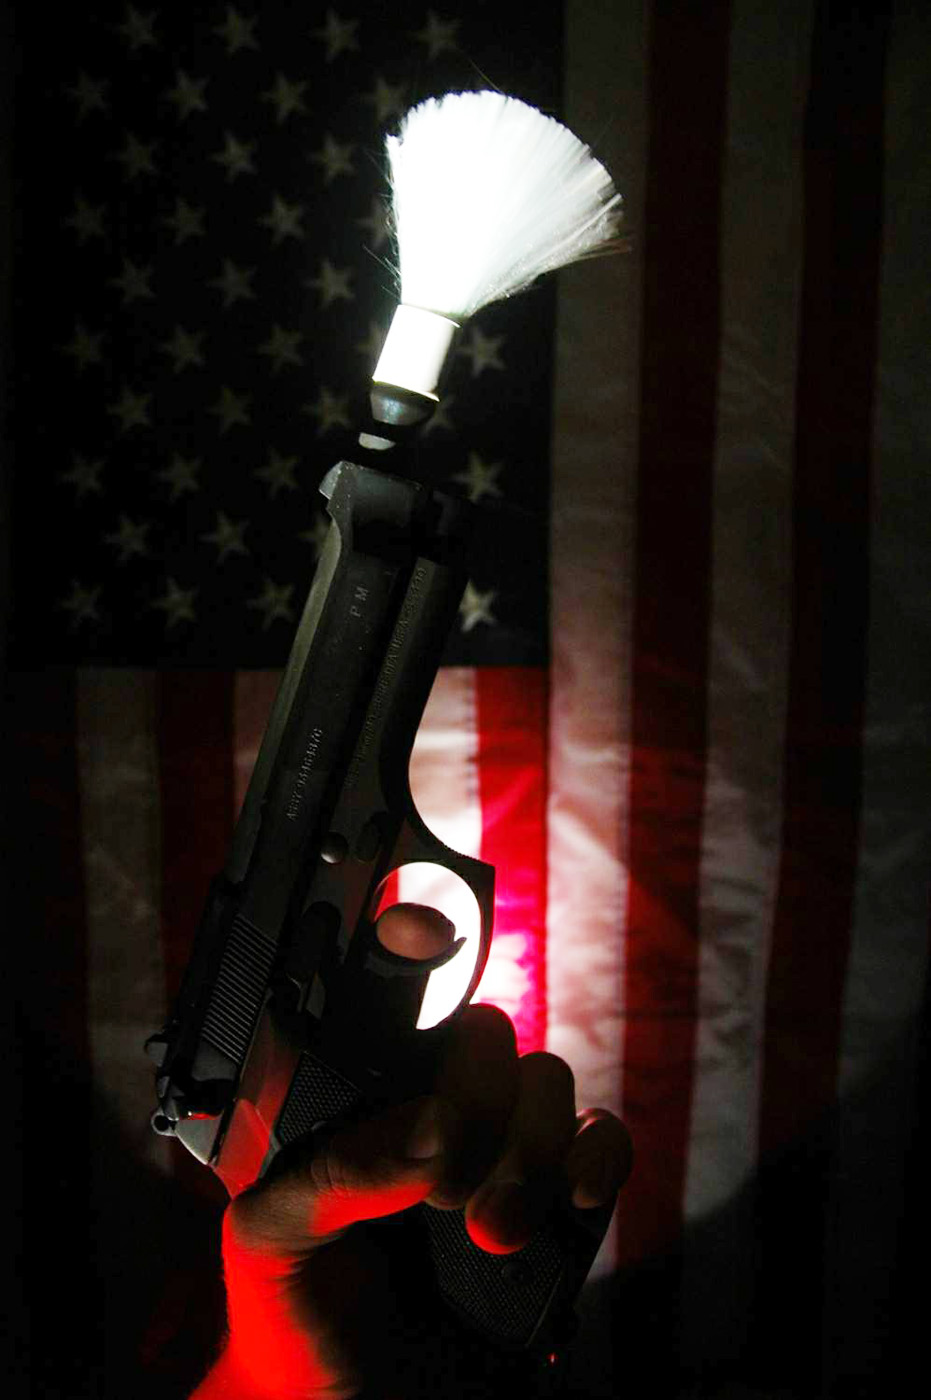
Battlefield detectives fight with fingerprints

Weapons Intelligence Team members collect biometric evidence from pre- and post-blast improvised explosive device incidents in May at Al Asad Air Base, Iraq. WIT members are skilled in IED construction, fingerprinting, biometrics, foreign weapons, media exploitation and sensitive sight exploitation.